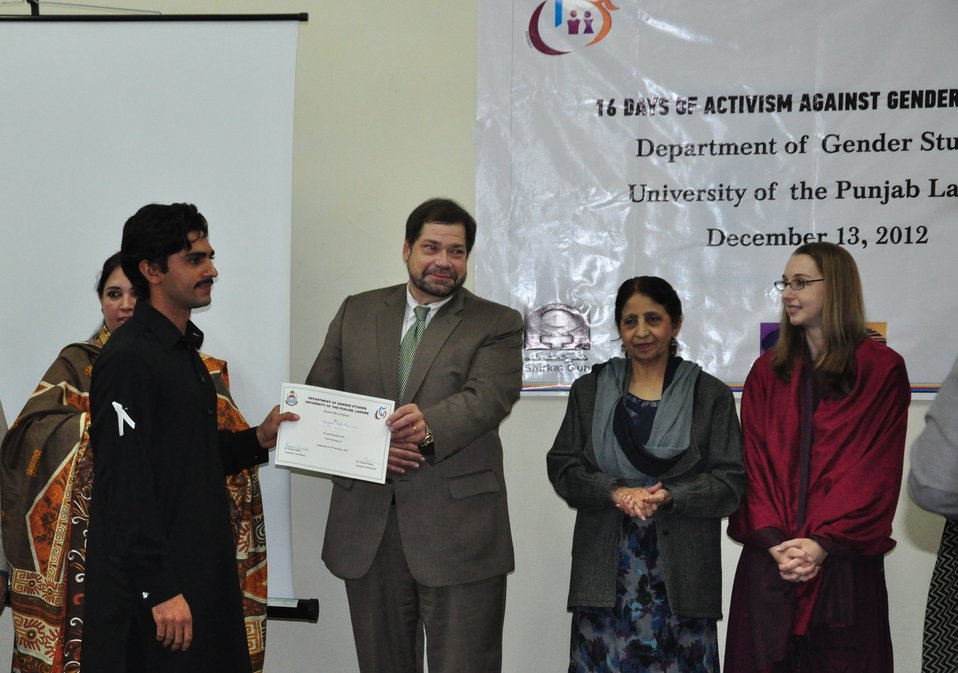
Mission Director for Punjab Jeffrey Bakken distribtuing certificates to students of Gender Studies Department of Punjab University.